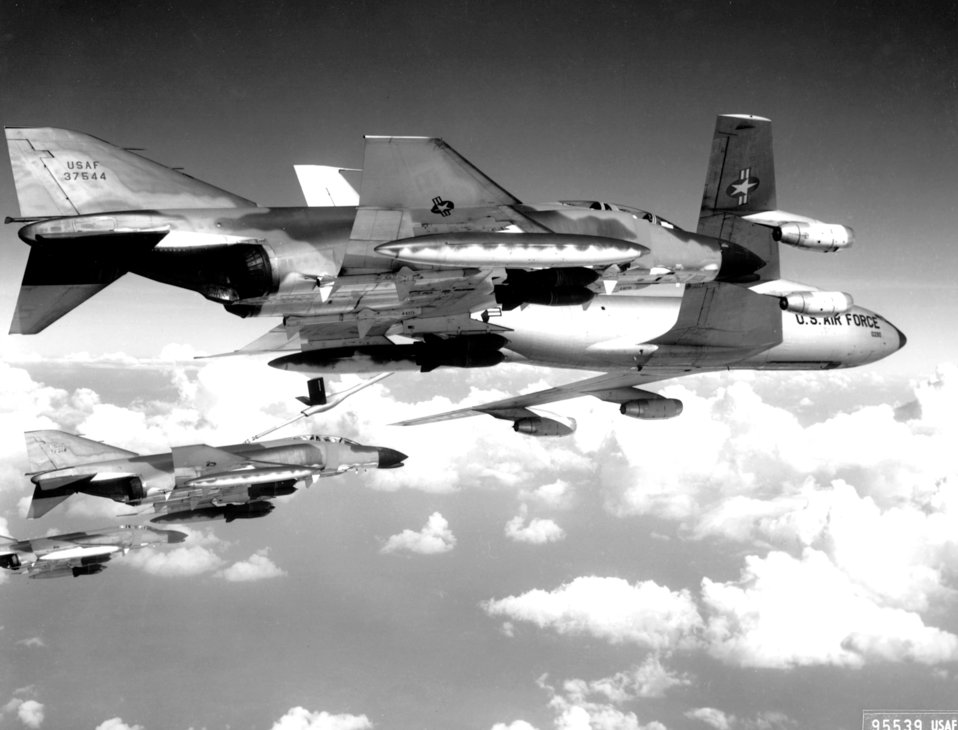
F-4C Phantom and KC-135 tanker

1960s -- A flight of U.S. Air Force F-4C Phantom fighter bombers refuel from a KC-135 tanker aircraft before making a strike against communist targets in North Vietnam. The Phantoms are fully loaded with 750 pound general purpose bombs and rockets.